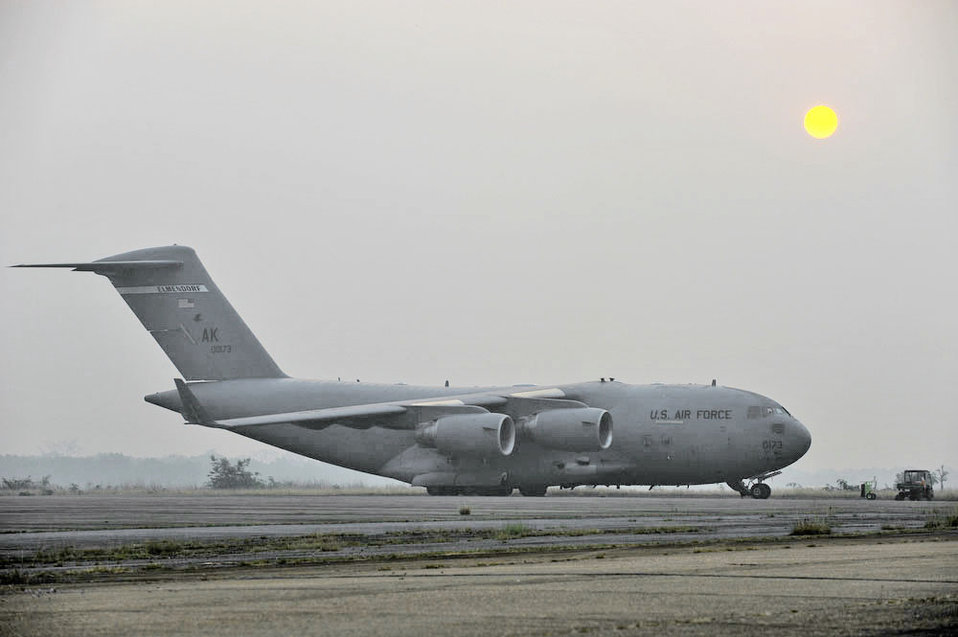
Cope Tiger 2010

A C-17 Globemaster III is parked on the flightline March 8, 2010, at Udon Thani Royal Thai Air Force Base, Thailand, during Cope Tiger. The C-17 is from Elmendorf Air Force Base, Alaska.